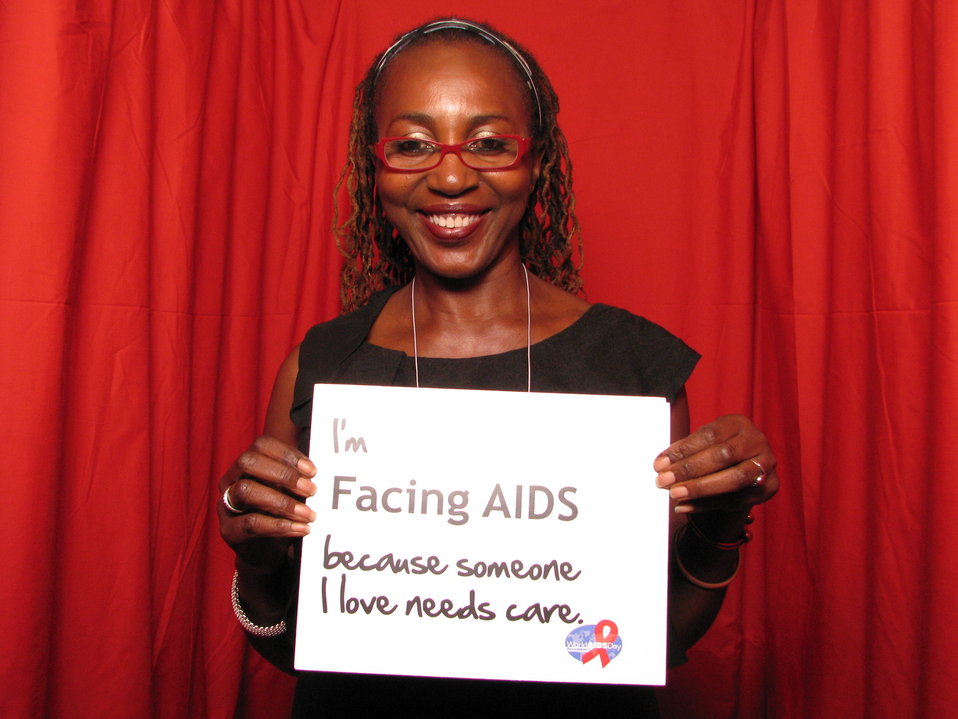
I'm FACING AIDS because someone I love needs care.

From the AIDS.gov photo booth at the U.S. Conference on AIDS, September 2010 (Orlando, FL).